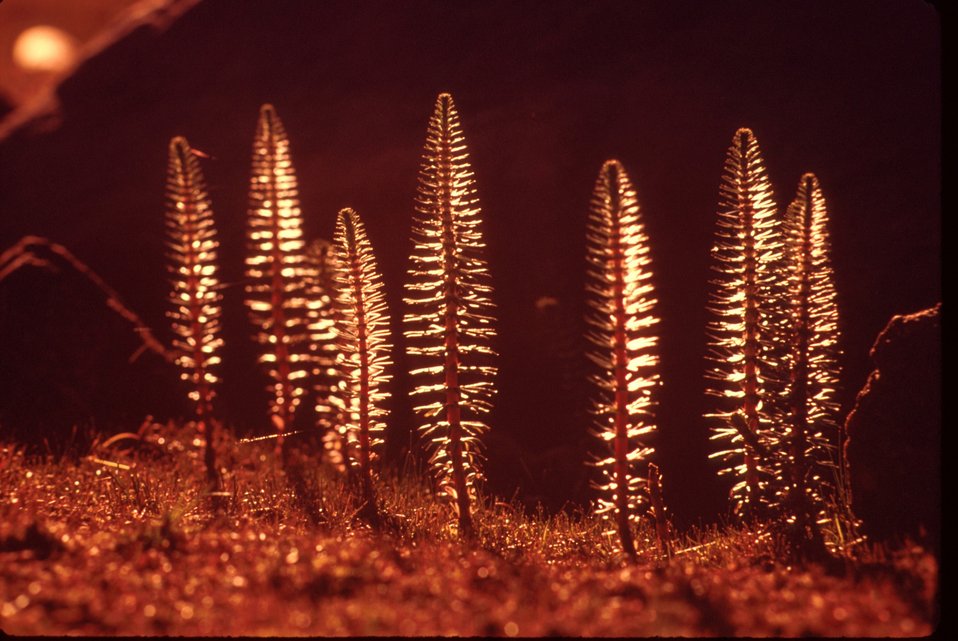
Equistum Horse Tails grass-like